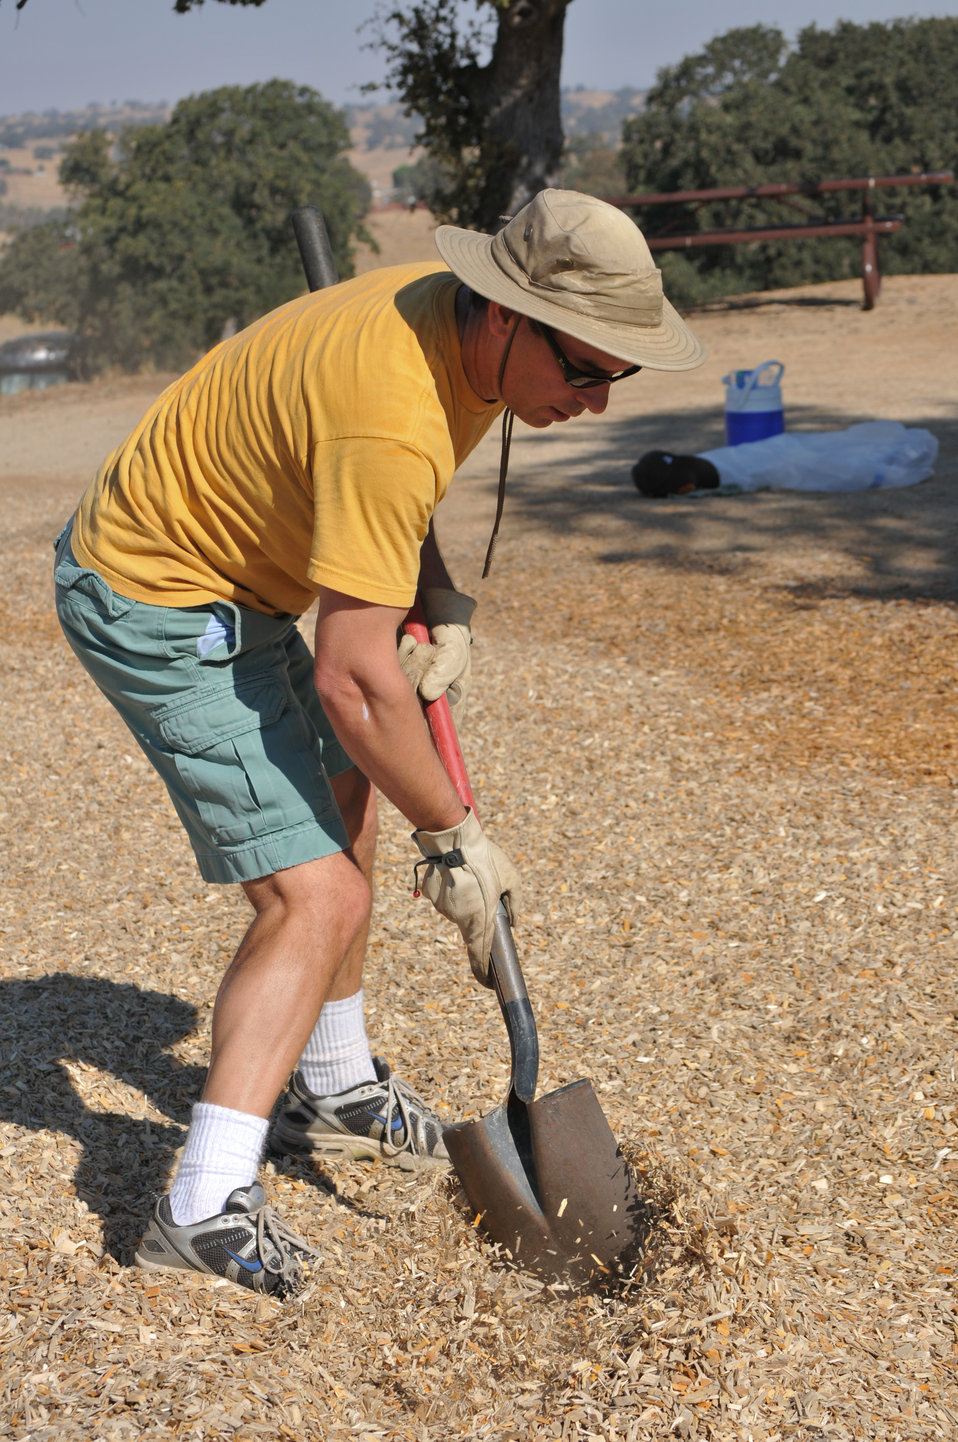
HENSLEY LAKE, Calif. (Sept. 25, 2010) – A volunteer grooms safety bark at one of Hensley’s public playgrounds here Sept. 25, as part of the park’s National Public Lands Day observance. More than 110 volunteers helped Hensley staff remove litter, repair trail erosion, clean the swimming beach and paint and clean signs throughout the park.